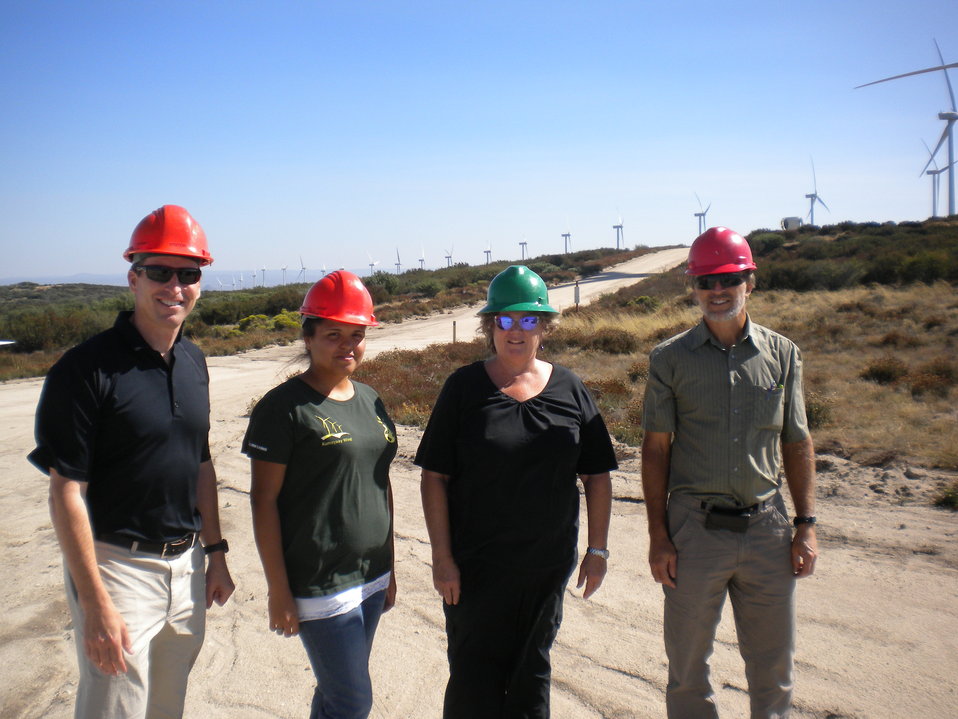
Office of Indian Energy Indian Energy Beat

Laura Quaha of the Campo Kumeyaay Nation and Melissa Estes with the Campo Envrionmental Protection Agency accompany START team members (Bob Springer and Robi Robichaud from NREL) at a September 2012 wind site assessment on the Campo Indian Reservation in San Diego County, California.